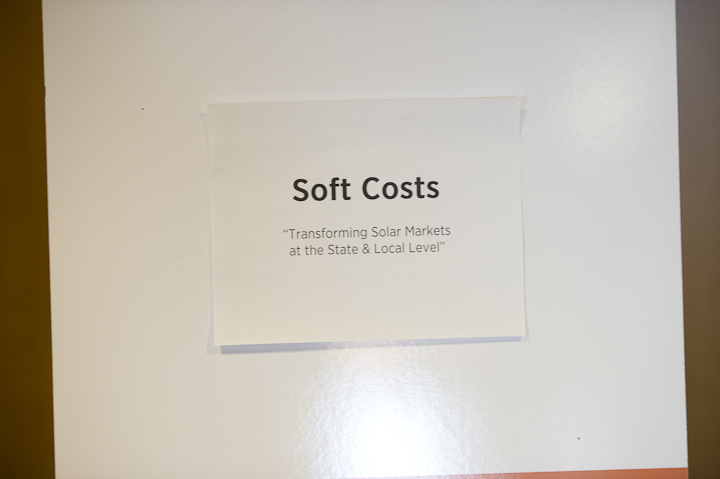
SunShot Soft Costs